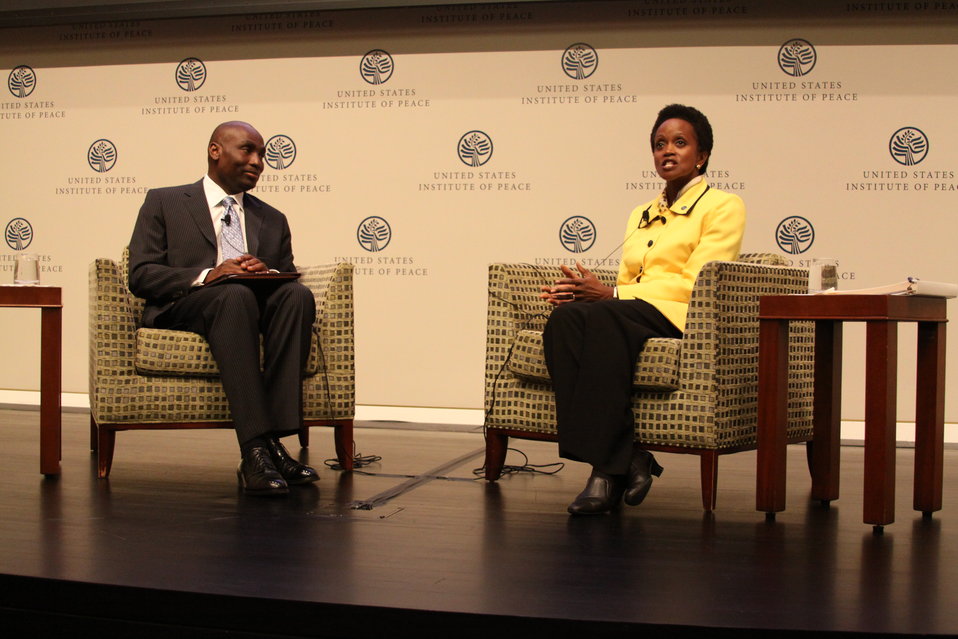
Assistant Secretary Brimmer Responds to Questions

U.S. Assistant Secretary for International Organization Affairs Esther Brimmer responds to questions at the U.S. Institute of Peace in Washington, D.C., on September 7, 2011.